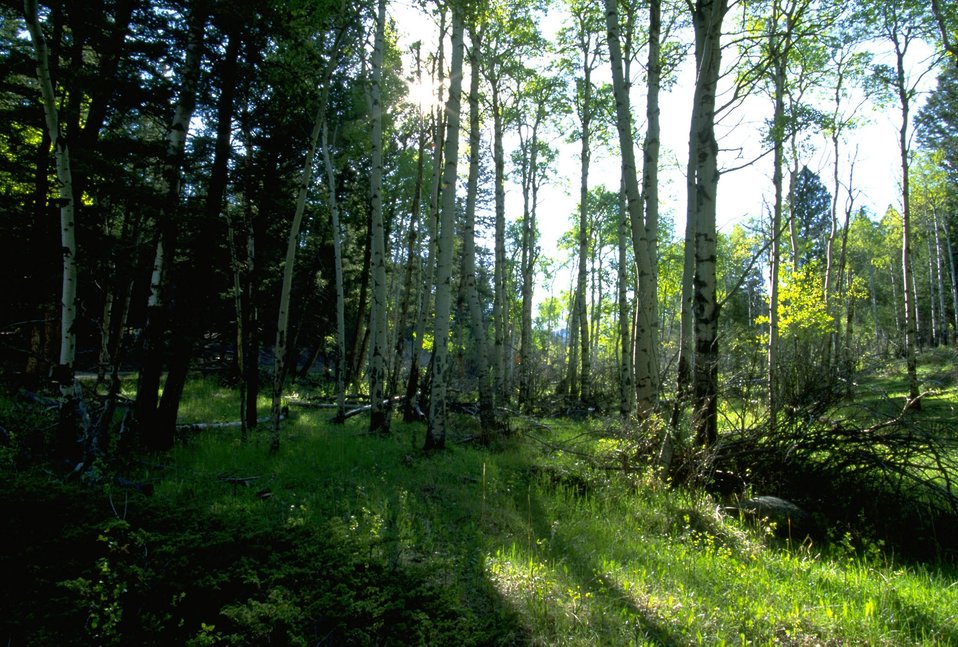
Grove of Aspen trees